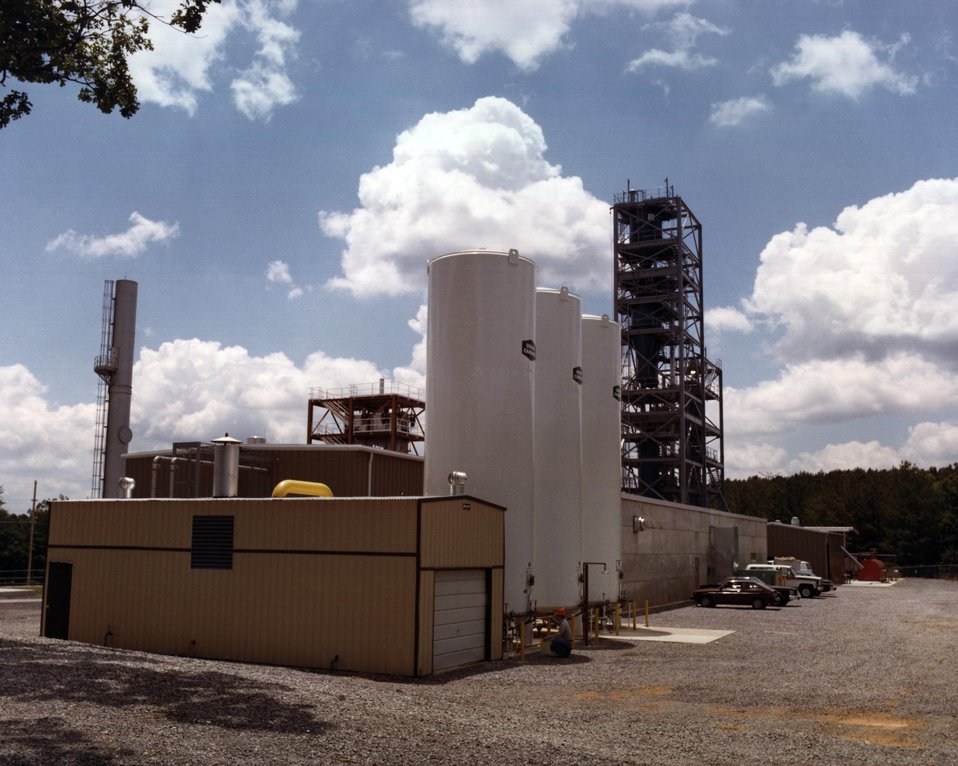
USING A WINDING MACHINE DESIGNED AND BUILT BY A.N.L., THESE TECHNICIANS ARE WINDING THE SUPERCONDUCTING MHD COILS.

IN THE MAGNETOHYDRODYNAMICS (MHD) PROCESS, A PARTIALLY IONIZED GAS FLOWING AT A HIGH SPEED THROUGH A MAGNETIC FIELD CREATES AN ELECTRIC CURRENT. ARGONNE NATIONAL LABORATORY IS BUILDING A SUPER CONDUCTING MAGNET THROUGH WHICH THE IONIZED GAS WILL FLOW. THIS MAGNET WILL BE USED IN THE MHD COAL FIRED FLOW FACILITY IN TENNESSEE.